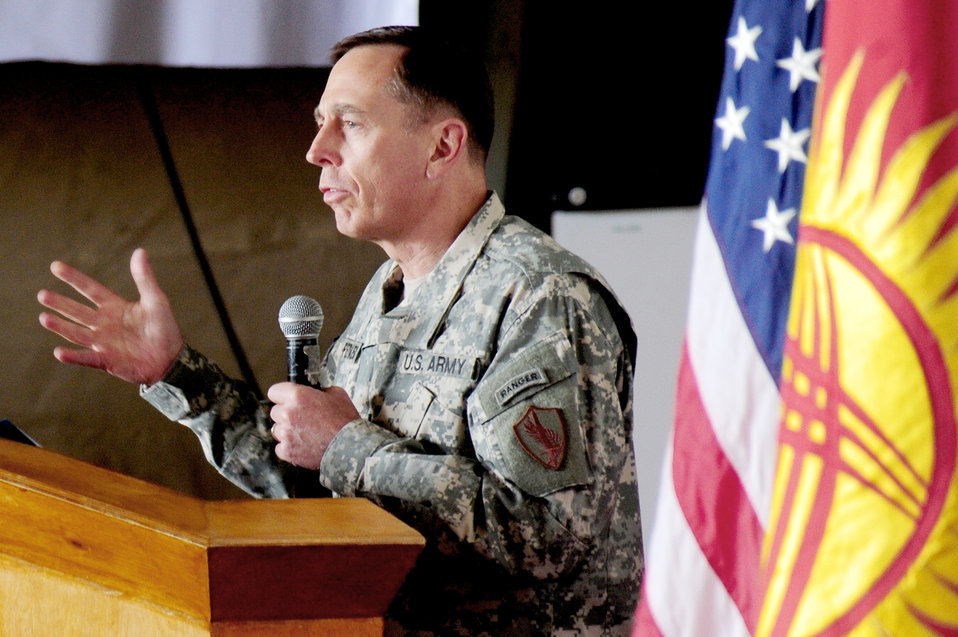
USCENTCOM commander visits Manas

Gen. David Petraeus speaks to servicemembers Aug. 16 at the Transit Center at Manas, Kyrgyzstan. General Petraeus thanked military and civilian warriors at Manas for their continued contribution to Operation Enduring Freedom. General and Mrs. Petraeus toured several 376th Air Expeditionary Wing facilities and got a first-hand look at the deployed lifestyle at Manas. General Petraeus is the U.S. Central Command commander.